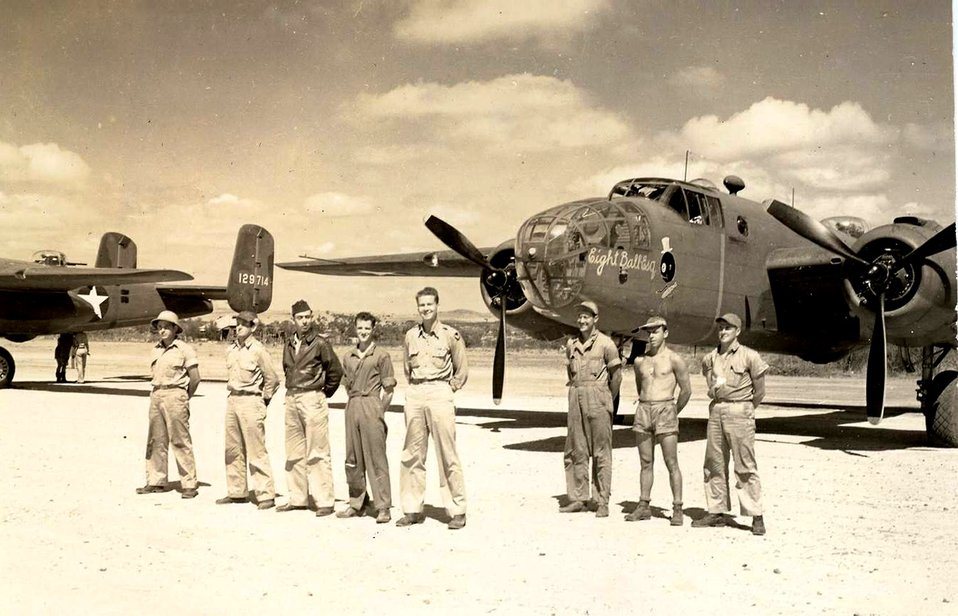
Airmen from the 13th Bombardment Squadron stand in front of the B-25D Mitchell